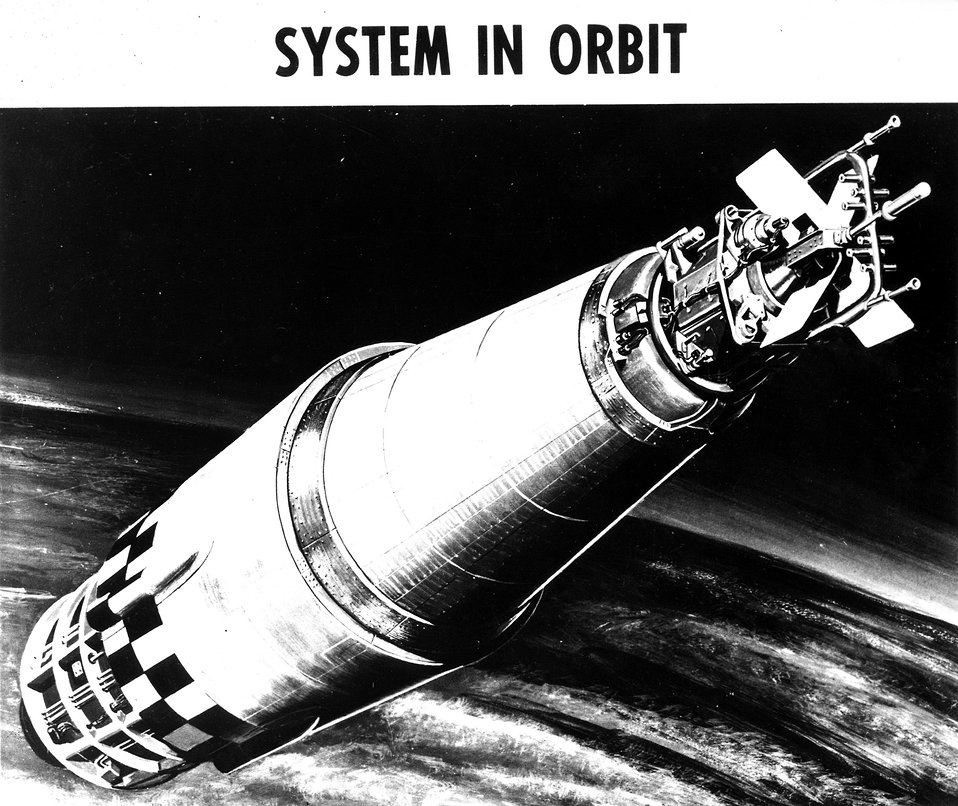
Artist's concept of the compact SNAP 10a nuclear power system in space shows the reactor and the thermoelectric converter-radiator mated to an Agenda vehicle.